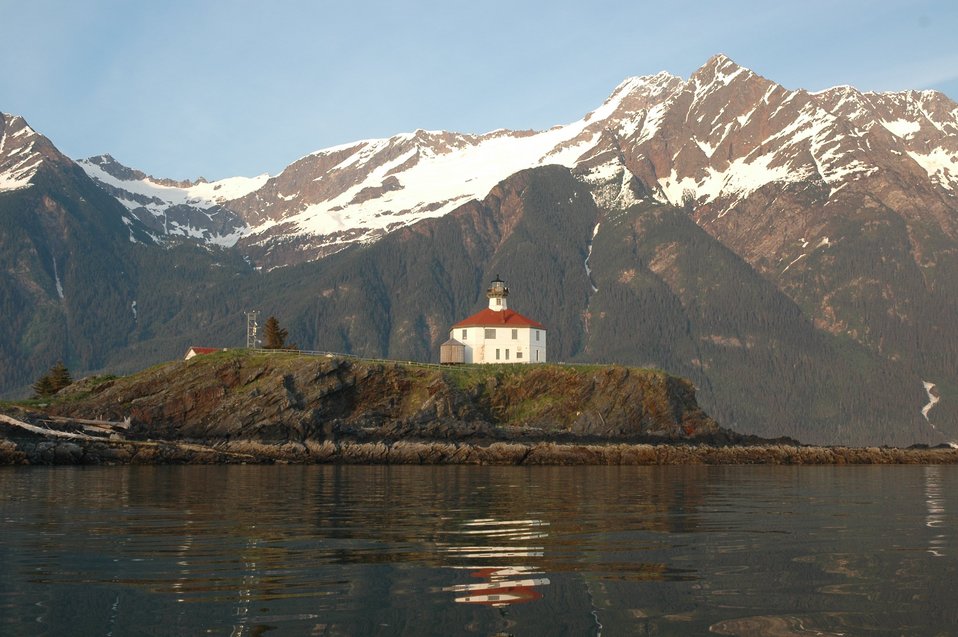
Eldred Rock Lighthouse in Lynn Canal.